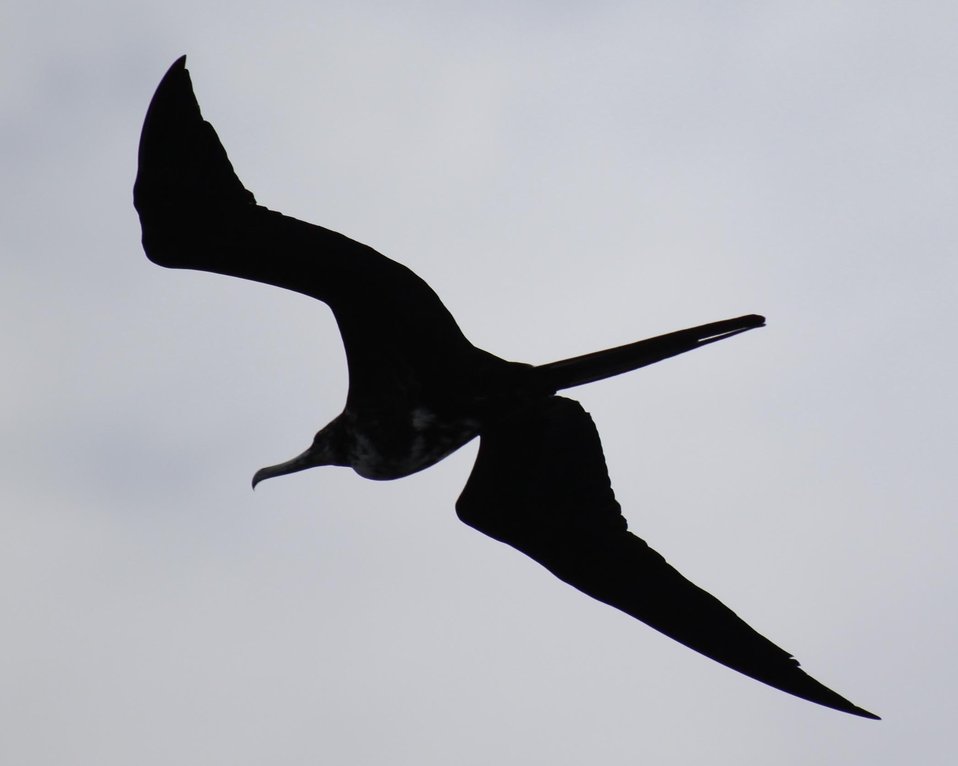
Frigatebird in flight